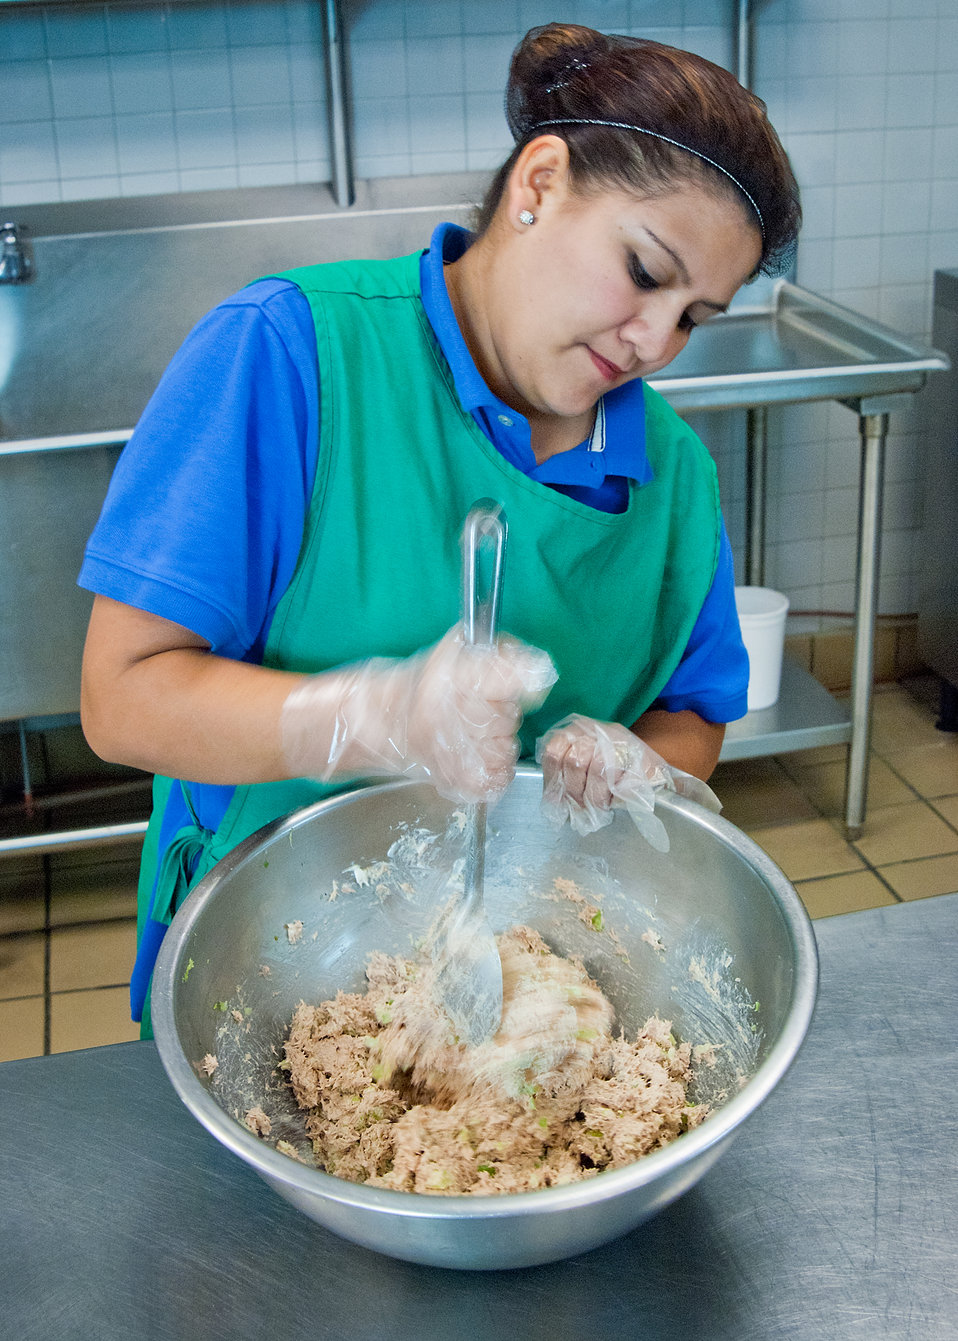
Candy Flores, Arlington Food Services mixes tuna fish she is preparing for sandwiches for the National School Lunch Program at Washington-Lee High School in Arlington, Virginia, on Wednesday, October 19, 2011. The National School Lunch Program is a federally assisted meal program administered by the United States Department of Agriculture, Food and Nutrition Service operating in public, nonprofit private schools and residential child care institutions. It provides nutritionally balanced, low-cost or free lunches to children each school day.